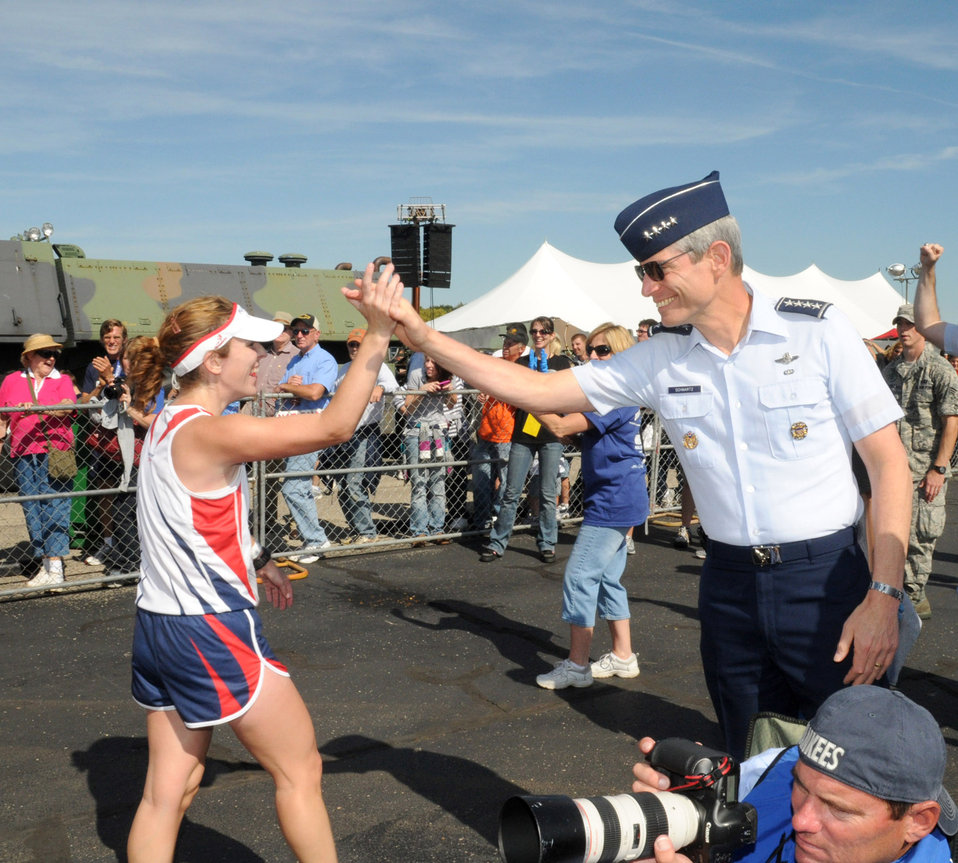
Chief of staff to participate in the Air Force Marathon 10K

Air Force Chief of Staff Gen. Norton Schwartz, seen here congratulating a runner at last year's Air Force Marathon, plans to run in this year's 10K race at the 14th annual event Sept. 18, 2010, at Wright-Patterson Air Force Base, Ohio.